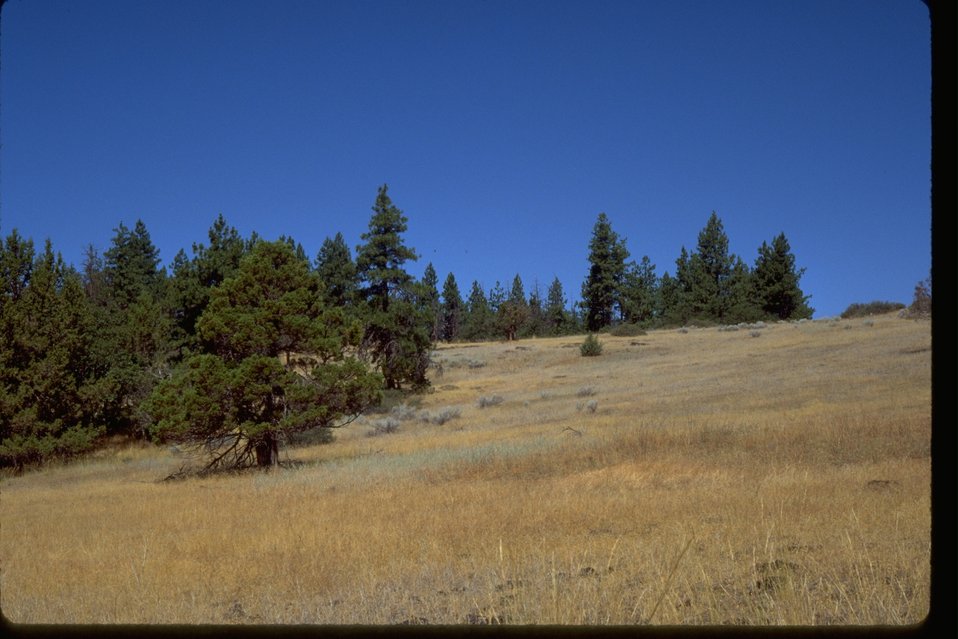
Agate Flats.